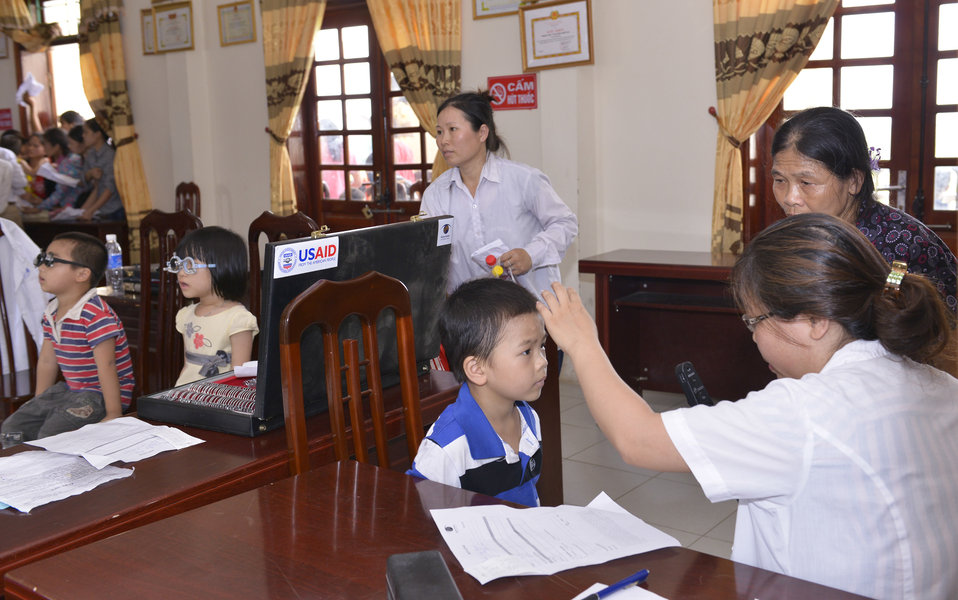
Eye screening for kindergarten children in Quoc Oai district of Hanoi

Quoc Oai, Hanoi. May 31, 2014.